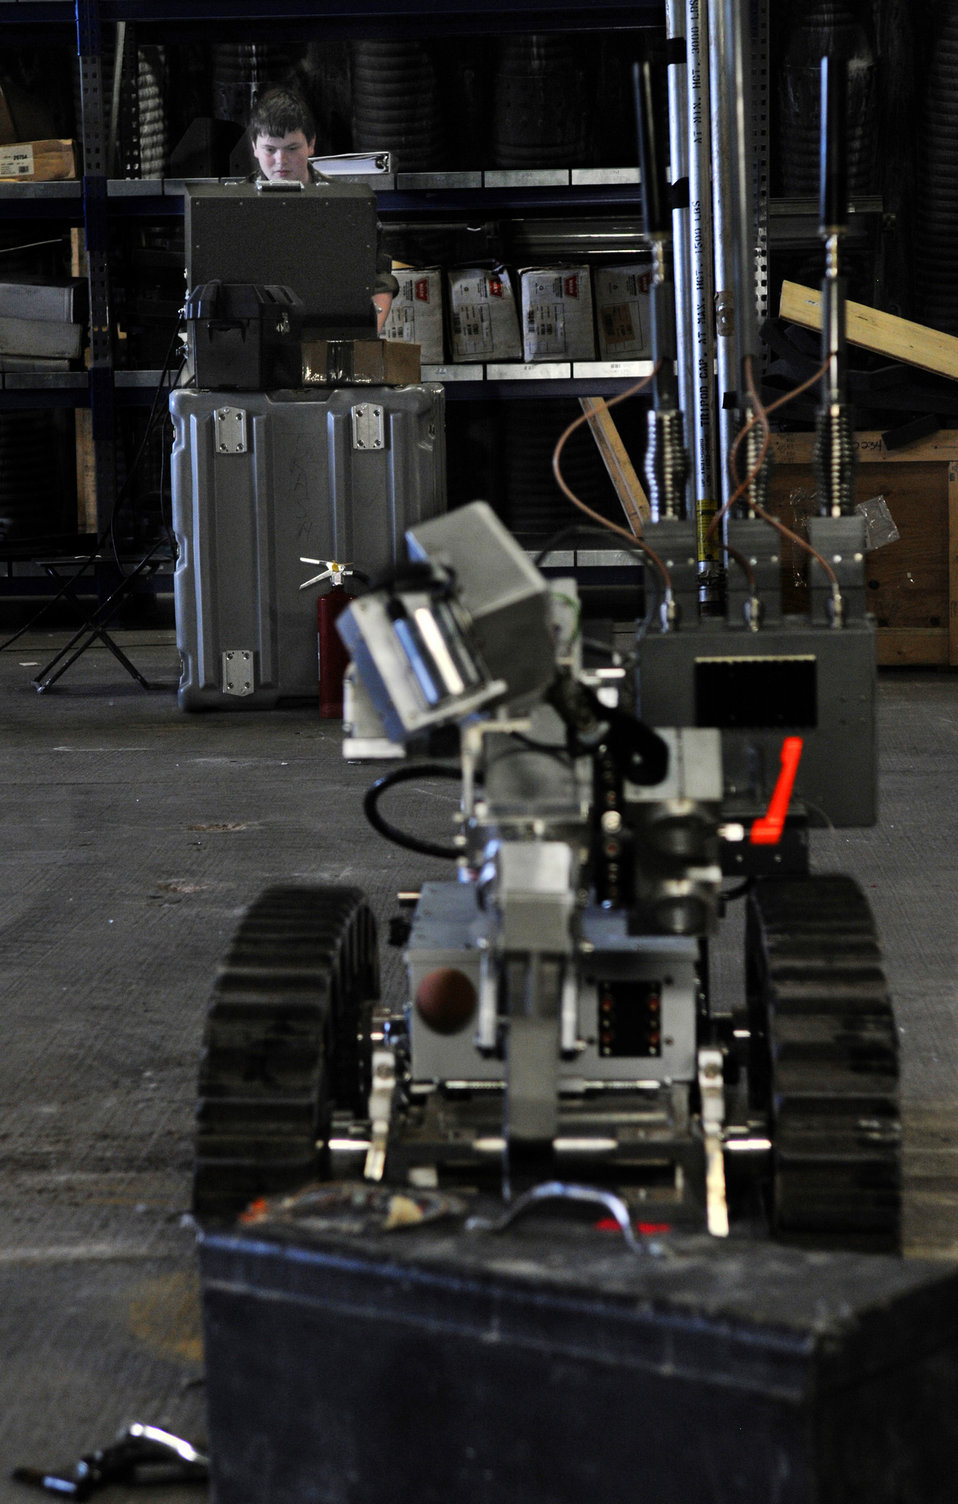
British cadets nurture 'spirit of adventure' at Ramstein

Royal Air Force Air Cadet Cpl. Ian Callow maneuvers an explosive ordnance disposal talon robot during a July 14 visit to Ramstein Air Base, Germany. RAF cadets visited Ramstein AB for a week of leadership development and contingency skills training.